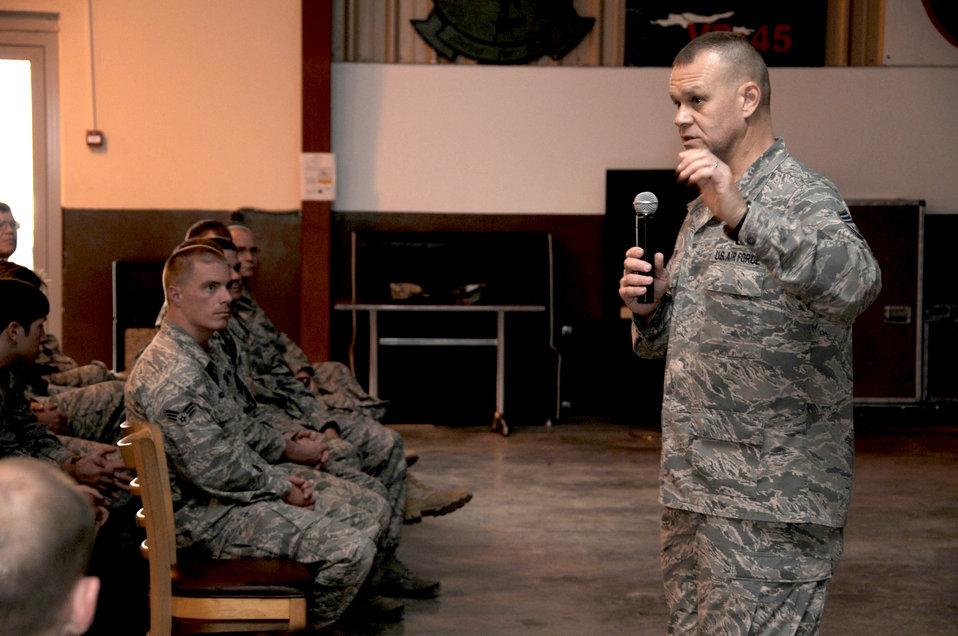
CMSAF Roy in HOA

Chief Master Sgt. of the Air Force James A. Roy speaks to Airmen at an enlisted call Oct. 13, 2010, at Camp Lemonnier, Djibouti. During the call, Chief Roy explained his office?s main focus areas: being ready for joint and coalition operations, deliberate development and building resiliency.